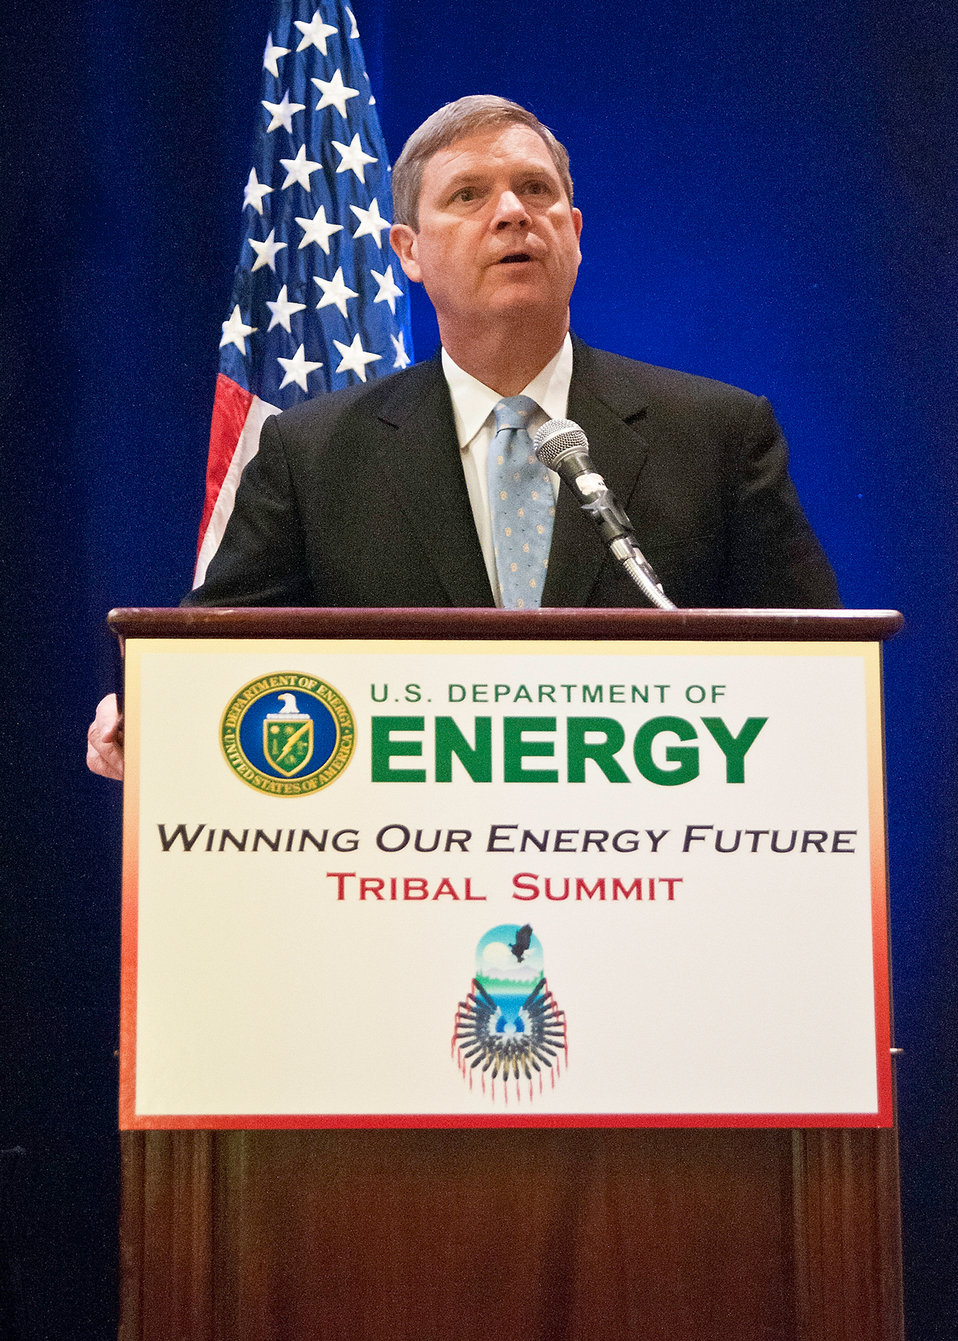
Agriculture Secretary Tom Vilsack offered the closing remarks at the conclusion of the roundtable discussions with Tribal Elected Leadership and Department of Energy Senior Program Leadership during the United States Department of Energy Tribal Summit with American Indian and Alaska Native Leaders in Washington, DC, on Wednesday, May 4, 2011. Secretary Vilsack discussed alternative energy, economic development and conservation programs available through the Department of Agriculture.